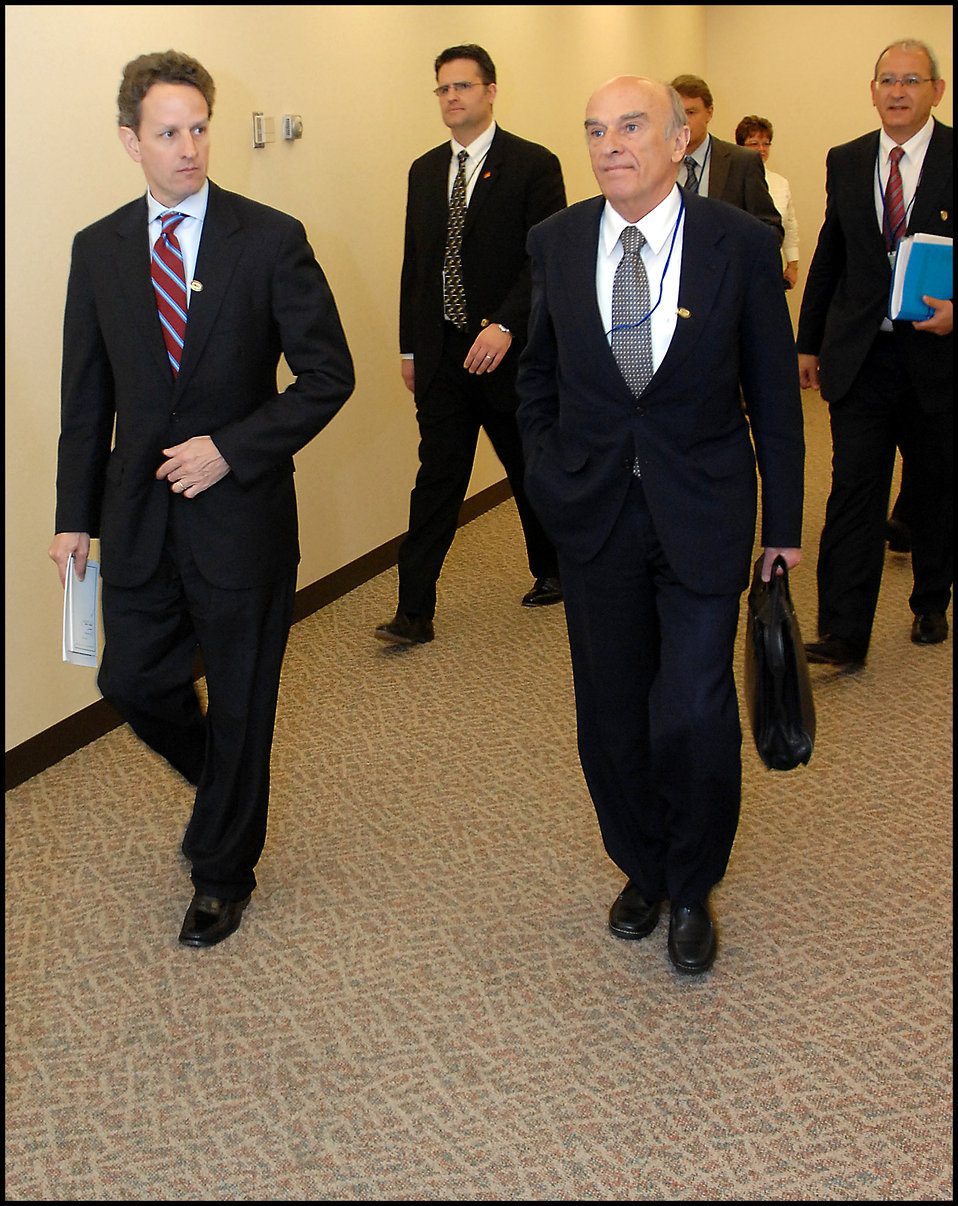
Swiss President and Finance Minister Merz at the IMF

On April 25, 2009, Secretary Geithner conducted a bilateral meeting with Swiss President and Finance Minister Merz at the IMF.